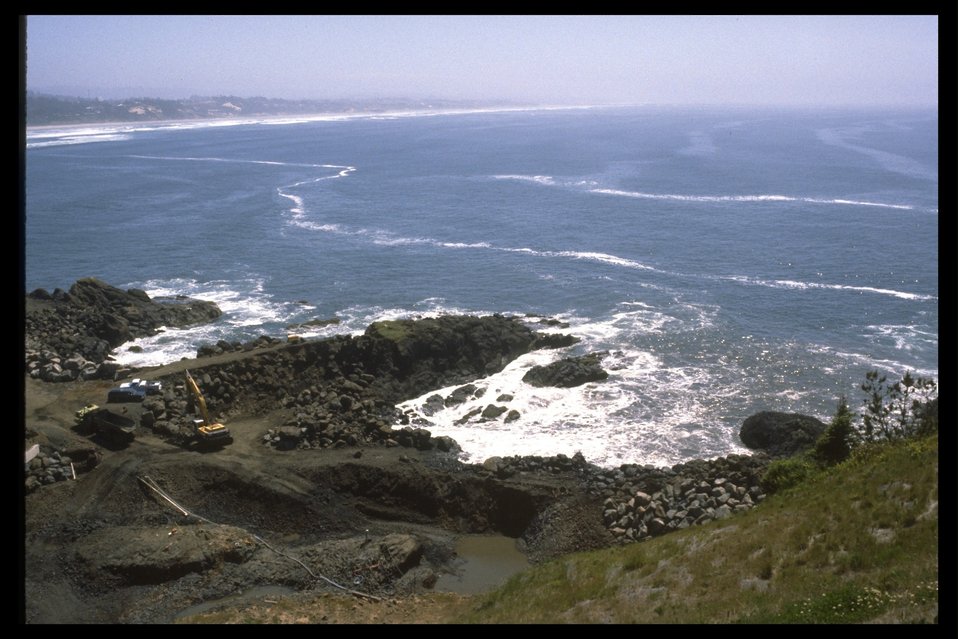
Construction of Quarry Cove tidepools.